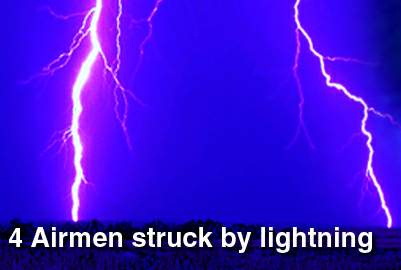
4 Hurlburt Field Airmen struck by lightning during training exercise

Four Airmen were injured by lighting during a field training exercise at approximately 8 a.m. Feb. 22 at a range on Eglin Air Force Base, Fla. One instructor and three students assigned to the 342nd Training Squadron, Det. 3 were injured while conducting vehicle navigation training. All four were transported by ambulance to the Fort Walton Beach Medical Center in Florida. Three Airmen were released and returned to duty, and one Airman remained at the hospital for further observation and is listed in good condition.